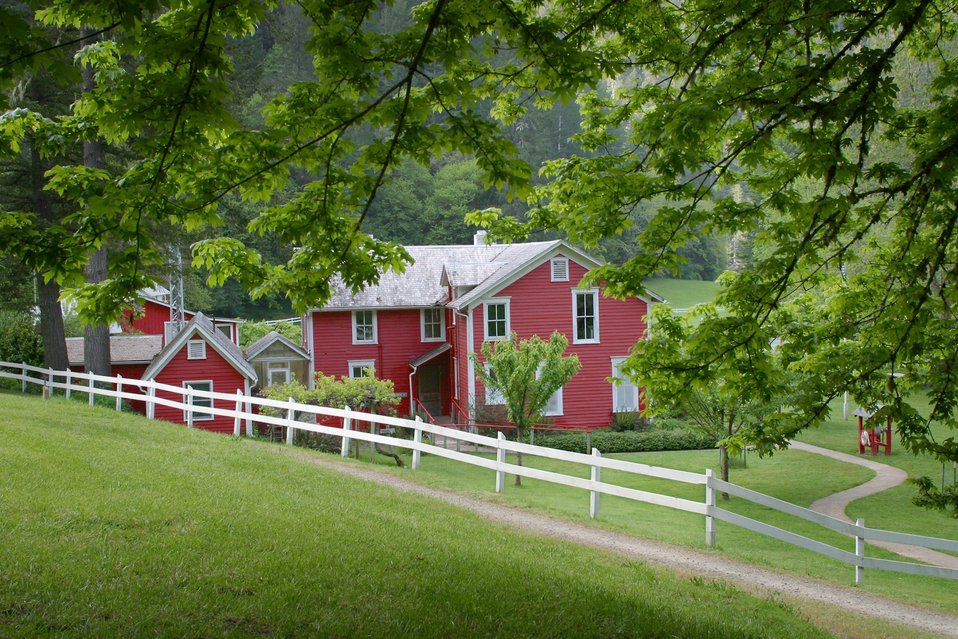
Wild section of the Rogue River from Grave Creek to Foster Bar May 19 to May 22.